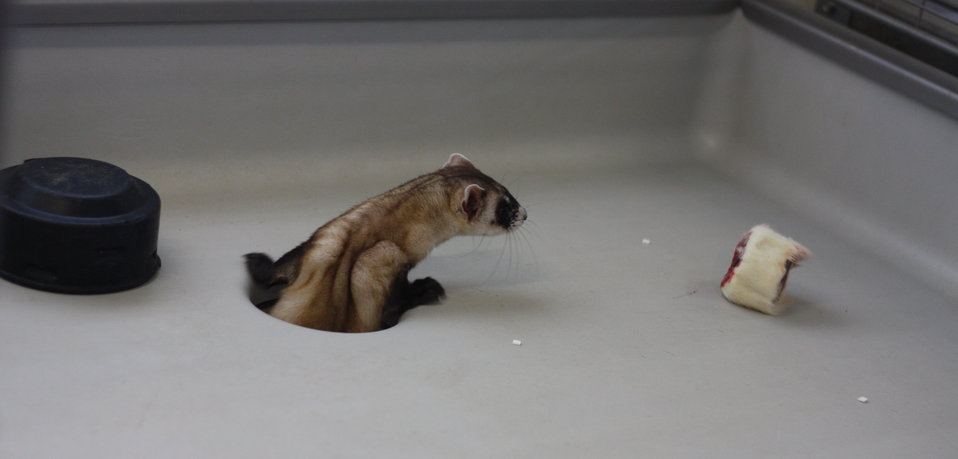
Interns visit the NBFFCC

In the summer of 2012, USFWS Region 6 interns visited the National Black-footed Ferret Conservation Center (NBFFCC) in Colorado to learn how the program reintroduces the endangered Black-footed ferret back into its native habitat.